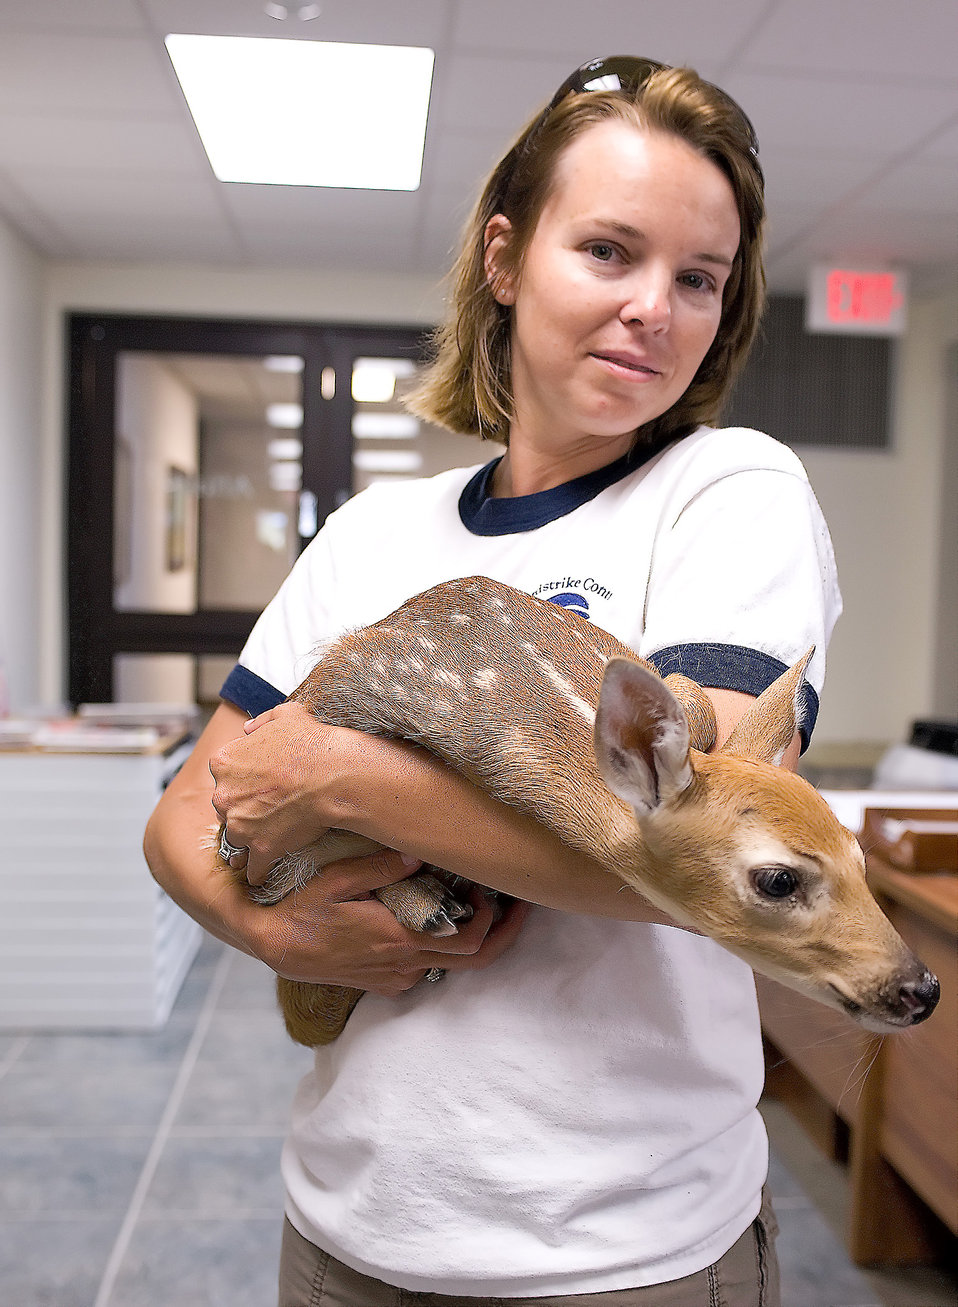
BASH

Melody Henderson holds a fawn she rescued June 9, 2011, from the flightline at Dover Air Force Base, Del. Mrs. Henderson is a bird/wildlife aircraft strike hazard ecologist and wildlife manager. She is part of an effort by the Air Force to minimize bird strikes.